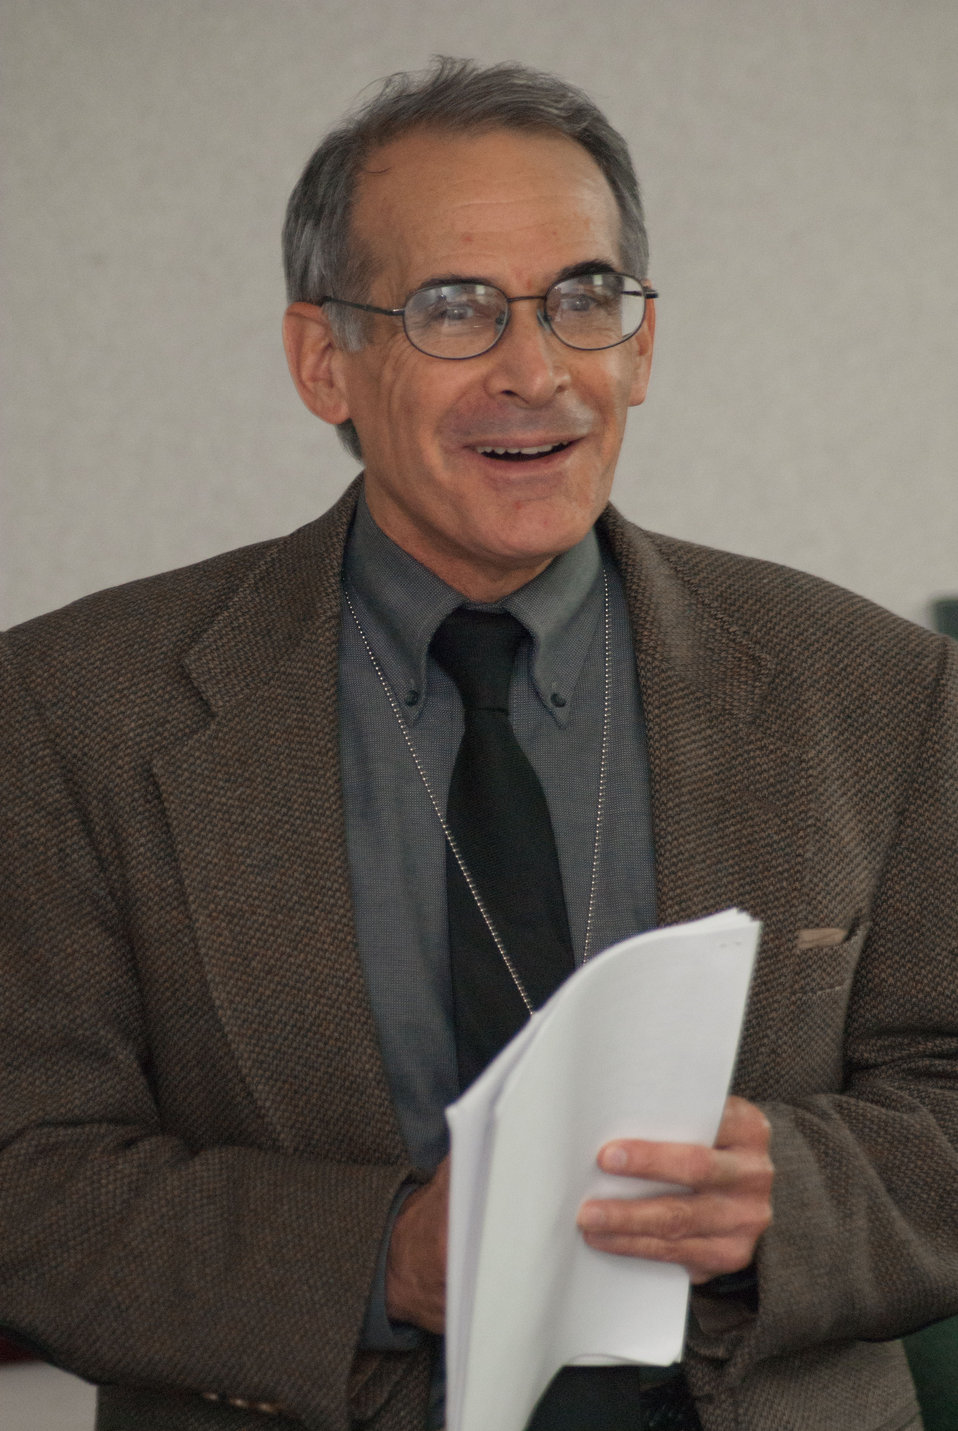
U.S. Department of Agriculture (USDA), Agriculture Research Service's Dan Strickman, spoke about Working with Scientists Across the Country, and Around the World with the Afghan Ministry of Agriculture's Borlaug Fellows at the George Washington Carver Center, in Beltsville, MD on Wednesday Sept. 21, 2011.